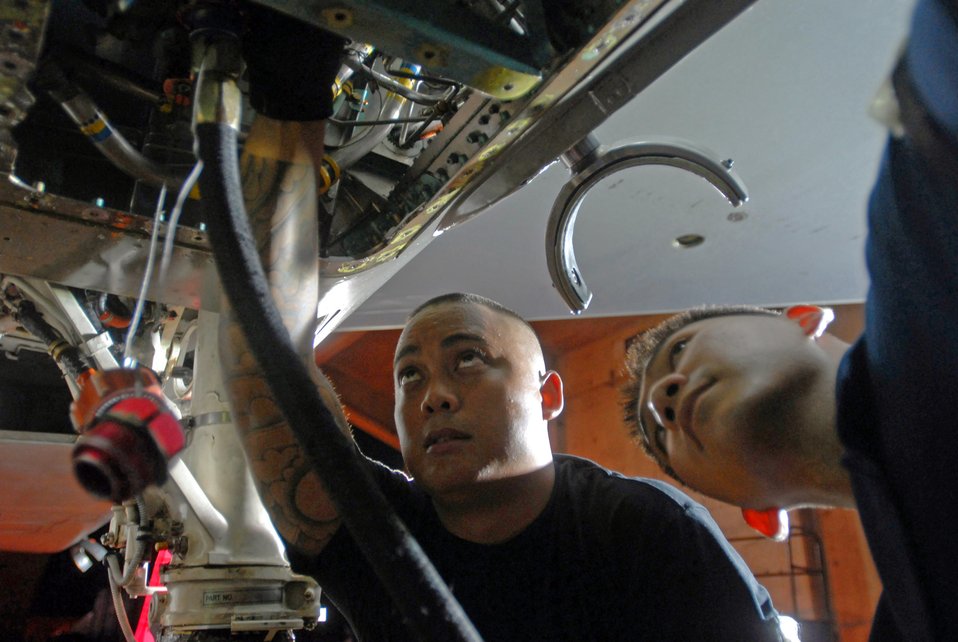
Crew chiefs work around the clock

Airmen 1st Class Rico Babas (left) and Ernsto Mercado Jr. perform a reservoir service to an F-15 Eagle during an Aug. 23 base exercise at Kadena Air Base, Japan. The reservoir service is performed to fill the F-15 with hydraulic fluids. The base conducted a three-day base exercise to demonstrate its ability to deploy and generate aircraft. Both Airmen are phase inspection team members with the 18th Equipment Maintenance Squadron.